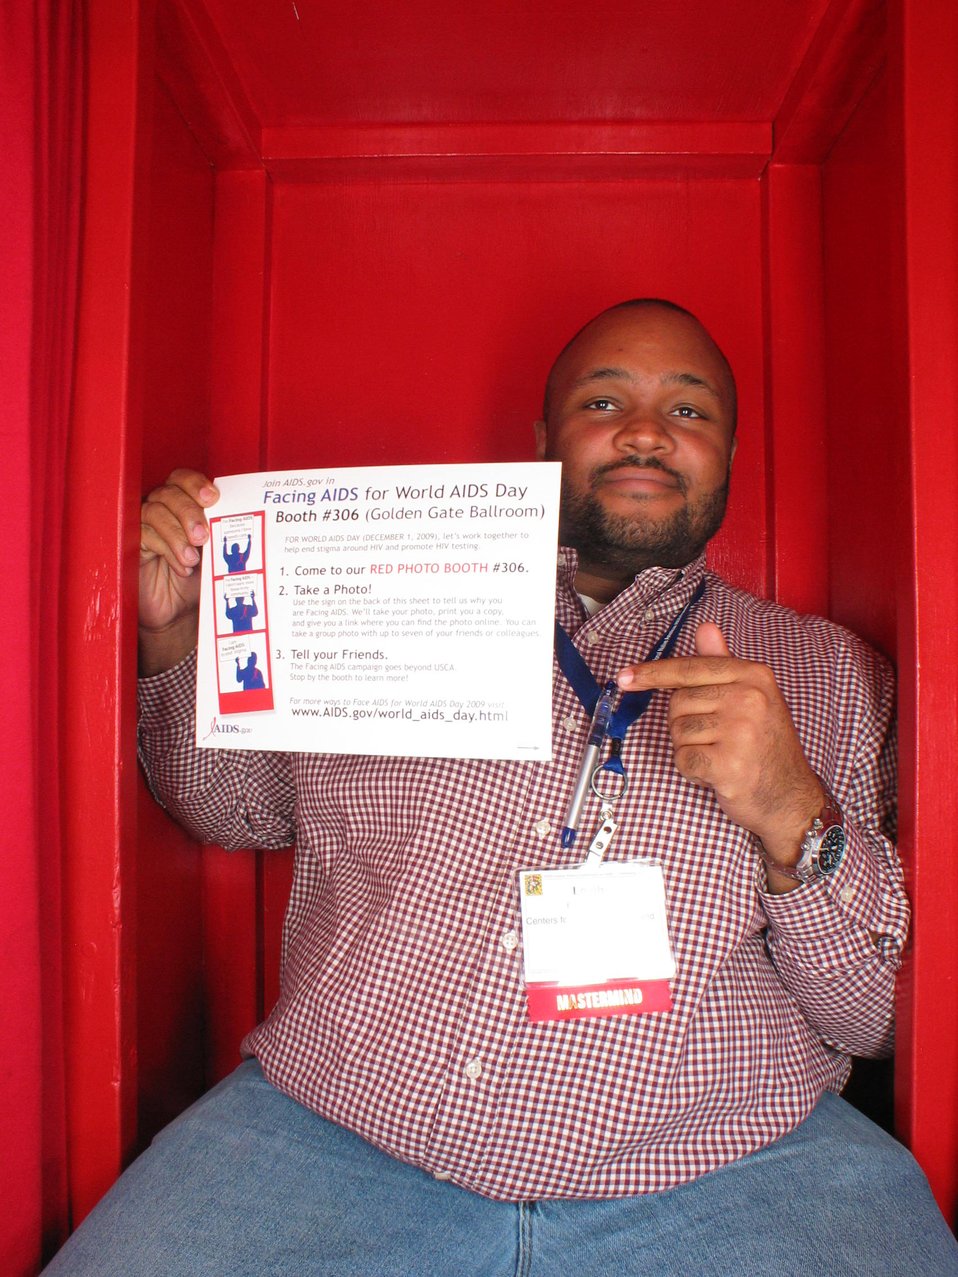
Facing AIDS